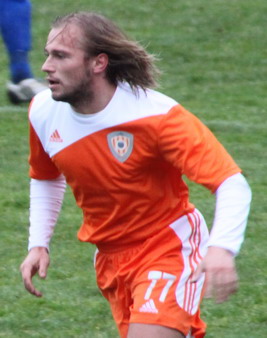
Русский: Александр Данишевский